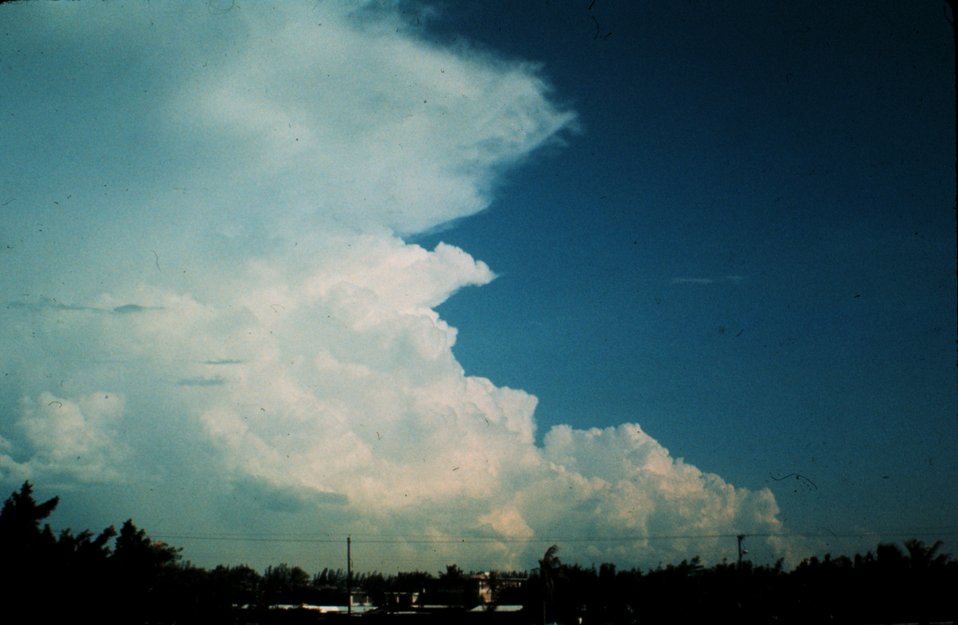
Cumulonimbus.